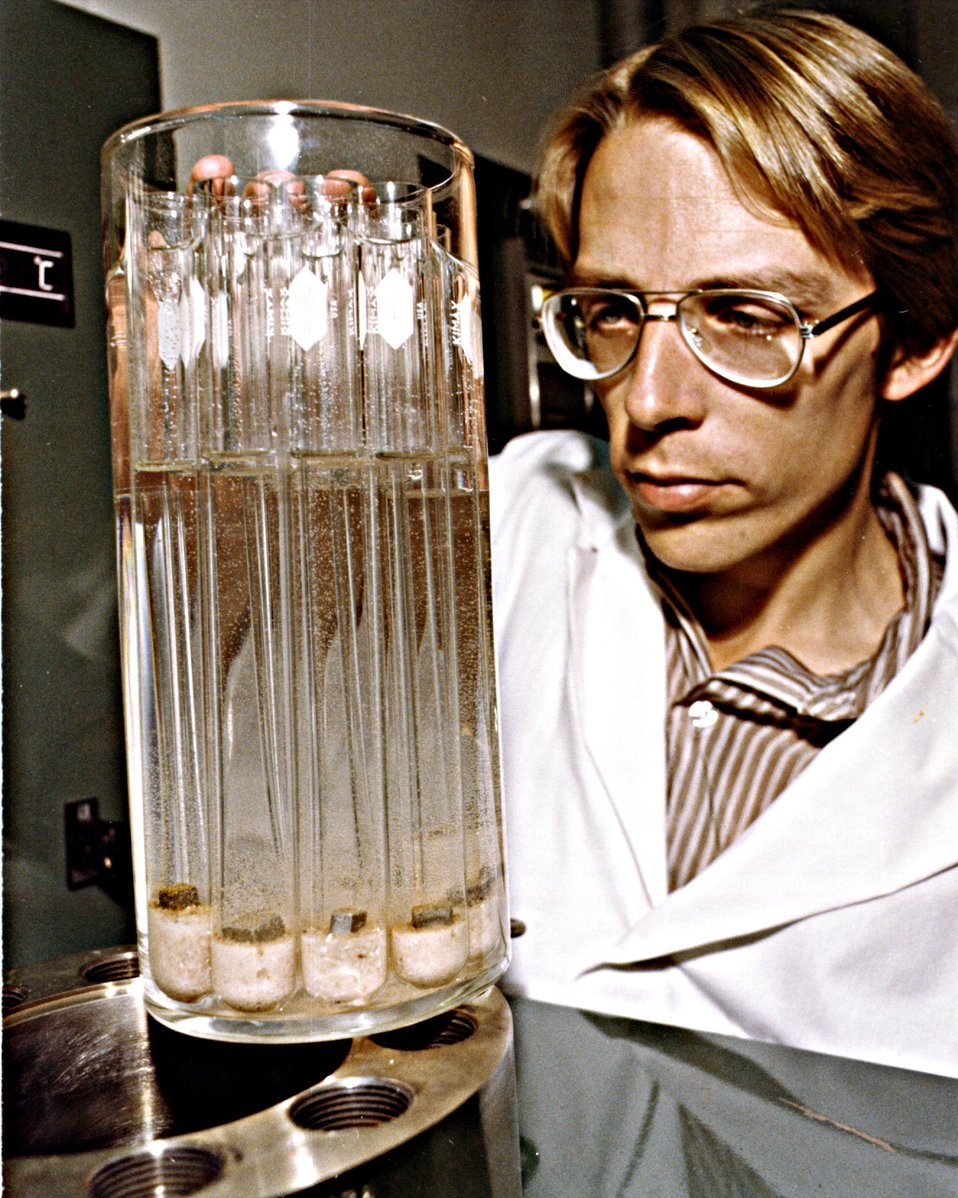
CANISTER MATERIAL TESTS.

RESEARCHER INSERTS A GLASS LINER CONTAINING 13 TEST TUBES INTO A HIGH-TEMPERATURE, HIGH-PRESSURE VESSEL (AUTOCLAVE) USED IN SANDIA NATIONAL LAB'S EXTENSIVE TESTS TO IDENTIFY THE EFFECTS OF HEAT ON MATERIALS WHICH MAY BE USED FOR RADIOACTIVE WASTE STORAGE CANISTERS. THE TEST TUBES CONTAIN CRUSHED AND BEDDED SALT, BRINE, AND SMALL 'COUPONS' OF THE ALLOYS (E.G., VARIOUS STAINLESS STEELS, CARBON STEEL, AND TITANIUM) BEING CONSIDERED AS CANISTER MATERIAL. THESE, ANOTHER TESTS, PROVIDE INFORMATION ABOUT CORROSION CHARACTERISTICS OF ALLOYS AND ARE PART OF A SCIENTIFIC EFFORT AT SANDIA TO INVESTIGATE BEHAVIOR IN SALT BEDS LOCATED IN SOUTHEASTERN NM, THE PROPOSED LOCATION OF A FACILITY TO BURY RADIOACTIVE WASTES IN ROOMS CARVED FROM BEDS WHICH ARE MORE THAN 2000 FEET BELOW THE EARTH'S SURFACE.